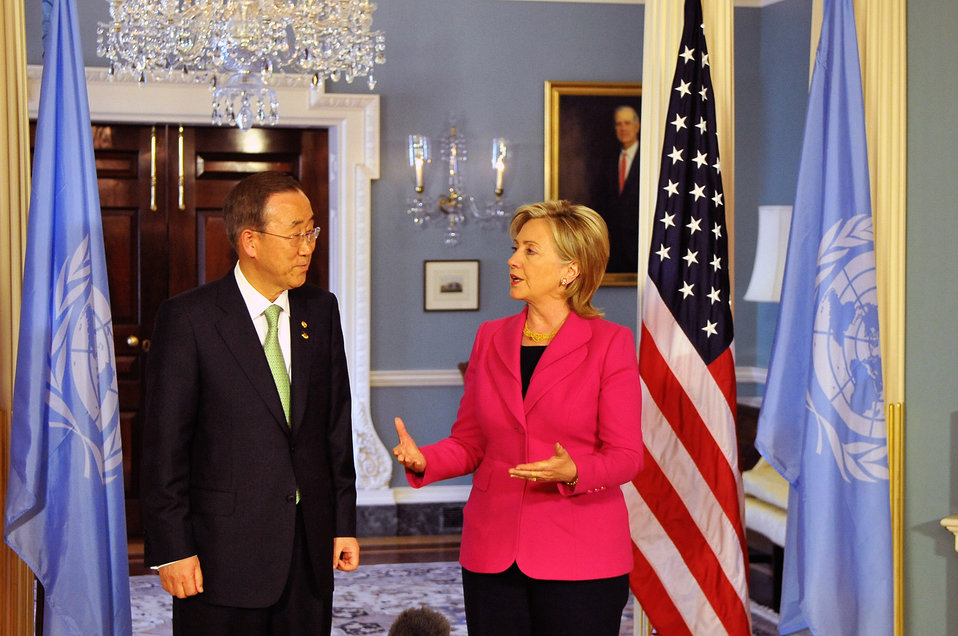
Secretary Clinton Meets with UN Secretary General

U.S. Secretary of State Hillary Rodham Clinton conducts a bilateral meeting with UN Secretary-General Ban Ki-moon in the Treaty Room of the U.S. Department of State in Washington, DC April 12, 2010.